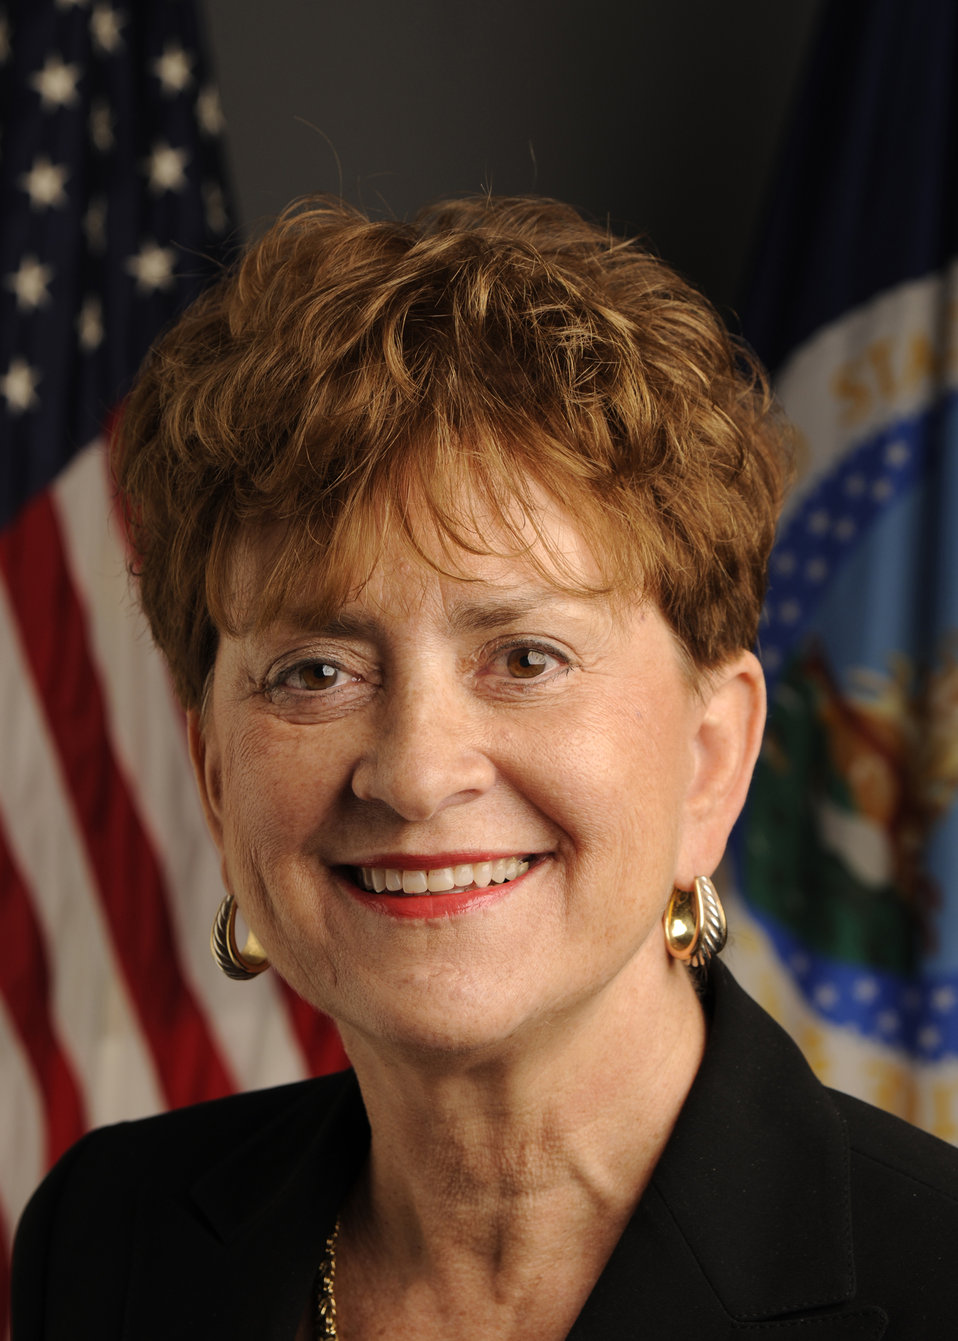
09di1062-05 Deputy Under Secretary Food and Nutrition Service Dr. Janey Thornton

Portrait Deputy Under Sec FNS Dr. Janey Thornton.